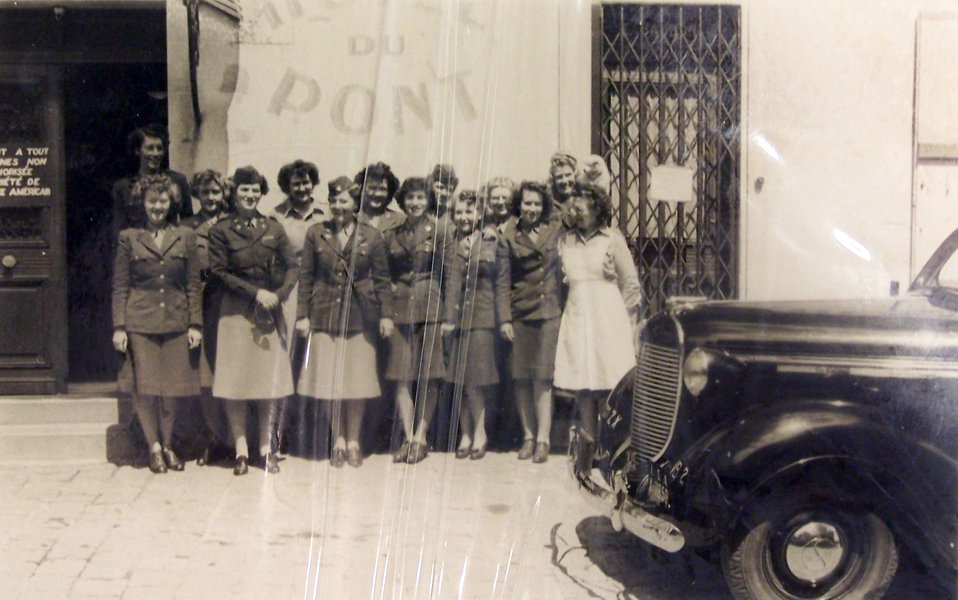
World War II vet recalls her service

Capt. Smitty McClellan (front row, second from left) poses with a group of the Women's Army Corps unit she led during World War II.